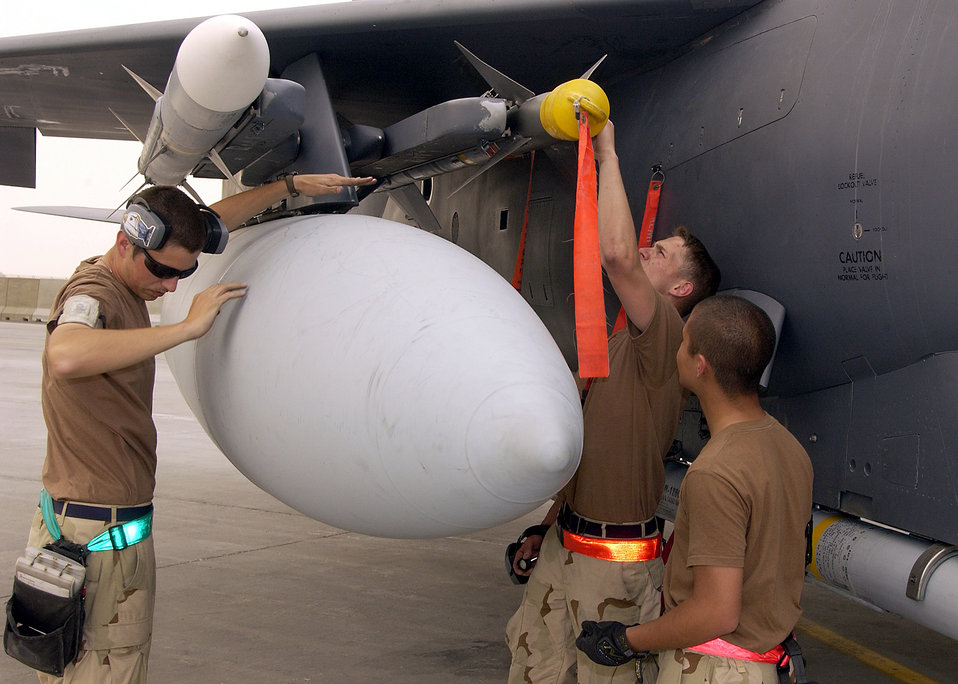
Arming up

SOUTHWEST ASIA -- A crew chief and bomb loaders from the 335th Expeditionary Fighter Squadron prepare the munitions on an F-15E Strike Eagle for a mission at a forward-deployed location on March 21, 2003. The Strike Eagles from Seymour Johnson A.F.B., are deployed in support of current operations in the Middle East.